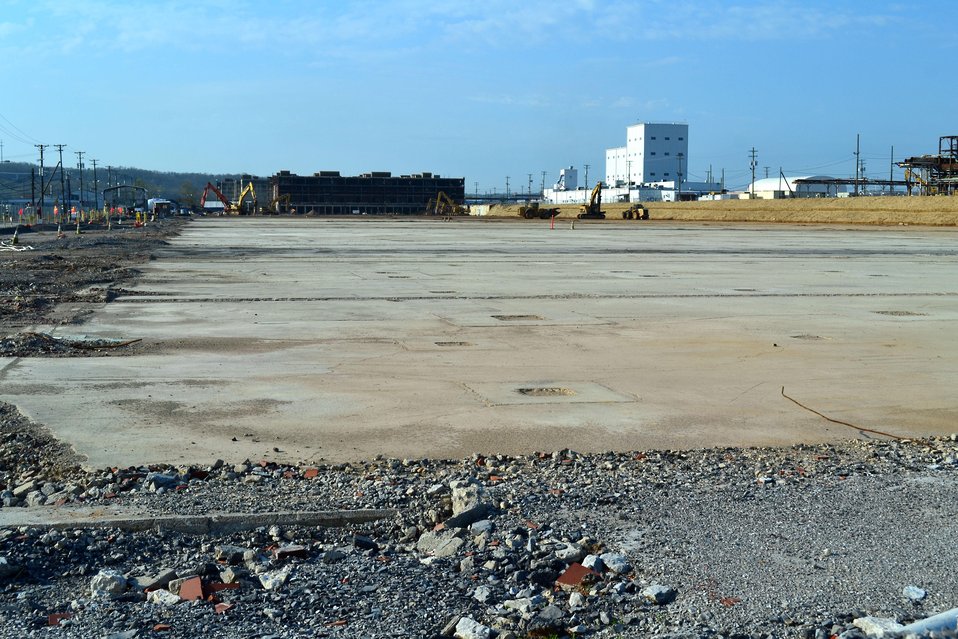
DandD work K-25 Oak Ridge

13-034 DOE photo Lynn Freeny 4-9-2013